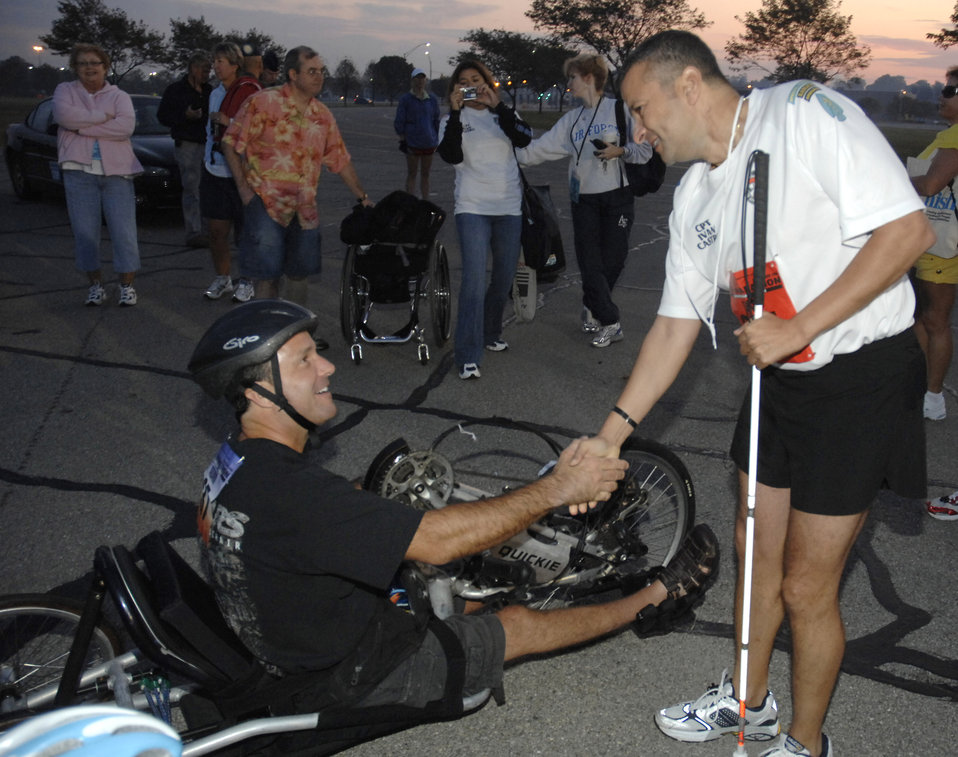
Disabilities don't stop marathoners

Wheelchair racer Andrew Houghton and Army Capt. Ivan Castro exchange best wishes prior to the start of the Air Force Marathon Sept. 20 at Wright-Patterson Air Force Base, Ohio. Captain Castro, who is blind as a result of combat injuries sustained in Iraq, ran tethered alongside Lt. Col. Fred Dummar. Both special forces officers are assigned to Fort Bragg, N.C. Mr. Houghton is chairperson for the Committee for Purchase From People Who Are Blind or Severely Disabled.